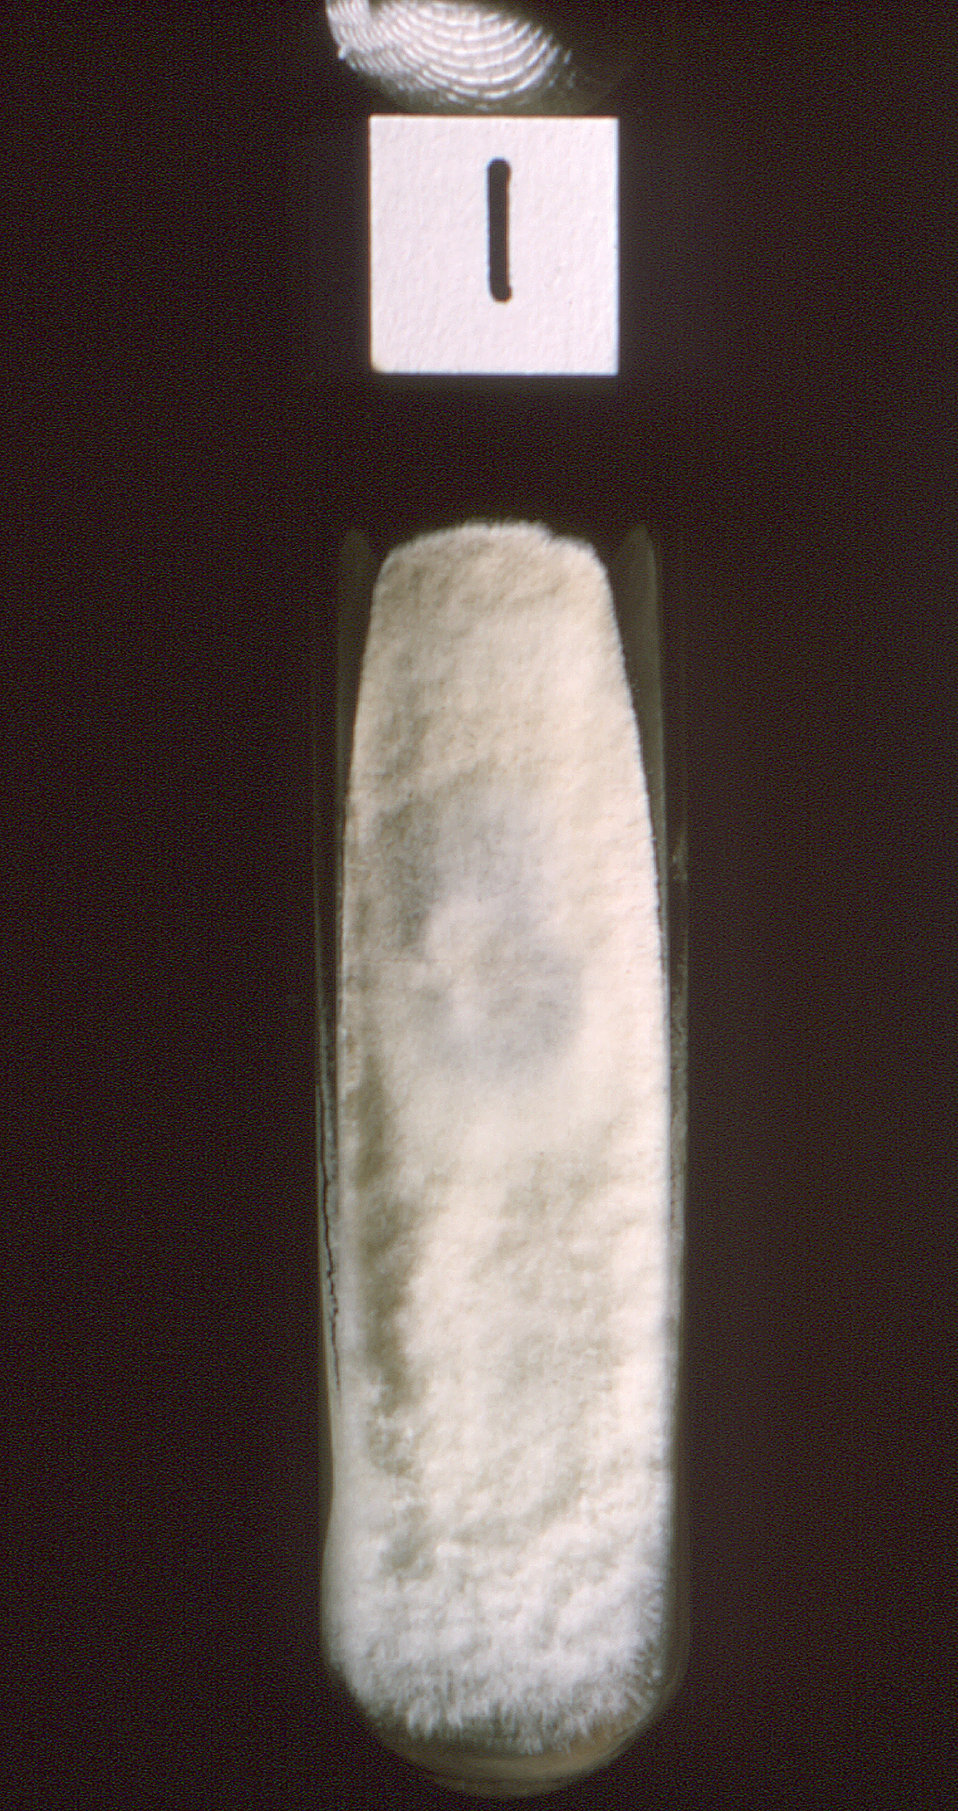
This photograph depicted a slant culture growing Coccidioides immitis fungal organisms on a medium of glucose PhytoneTM, yeast extract, while contained within a 25 X 150mm test tube.